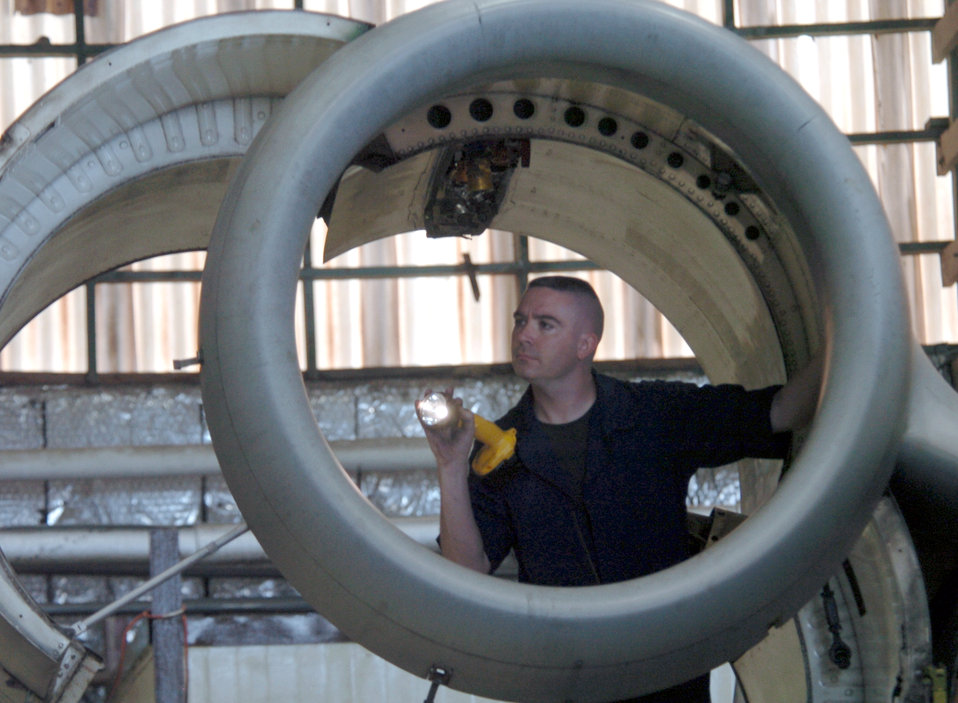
It's just a phase

OSAN AIR BASE, South Korea -- Staff Sgt. James Dougan inspects the engine bay area of an A-10 Thunderbolt II aircraft at the phase dock here Aug. 25. Sergeant Dougan is a jet engine mechanic for the 51st Maintenance Squadron. Mechanics periodically check aircraft for cracks, leaks and chaffing to ensure they are in top condition.